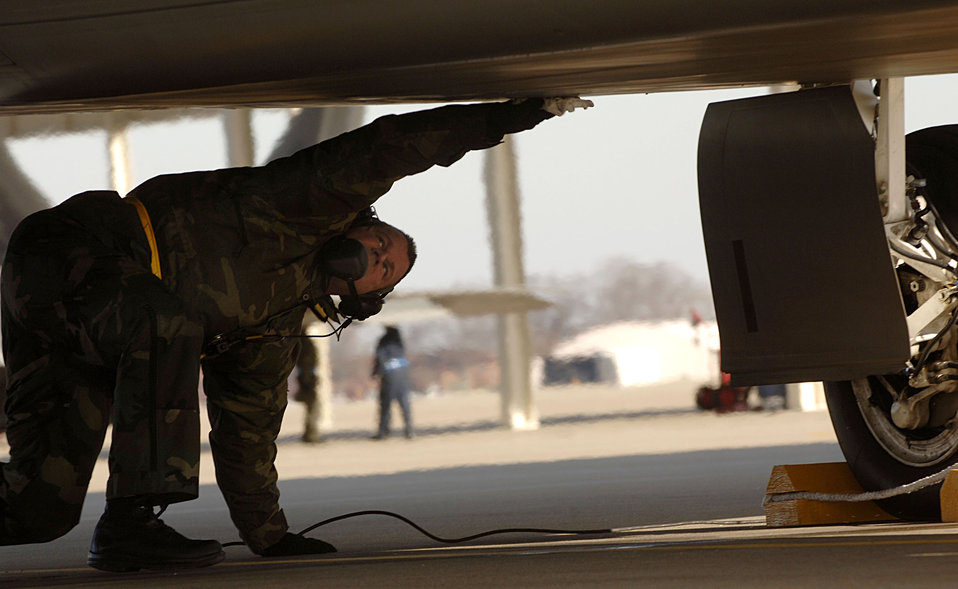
Raptors head to Red Flag

Staff Sgt Tom Mills goes through a series of aircraft checks Feb. 3 at Langley Air Force Base in Virginia.The 94th Fighter Squadron is deploying for Red Flag at Nellis AFB, Nev. Red Flag is an air combat training exercise designed to test pilots and air support crews' ability to affectively respond to real-world combat scenarios. This is the first deployment to Red Flag for the 94th FS with F-22s. Sergeant Mills is a crew chief with 192nd Virginia Air National Guard assigned to the 94th Aircraft Maintanence Unit.